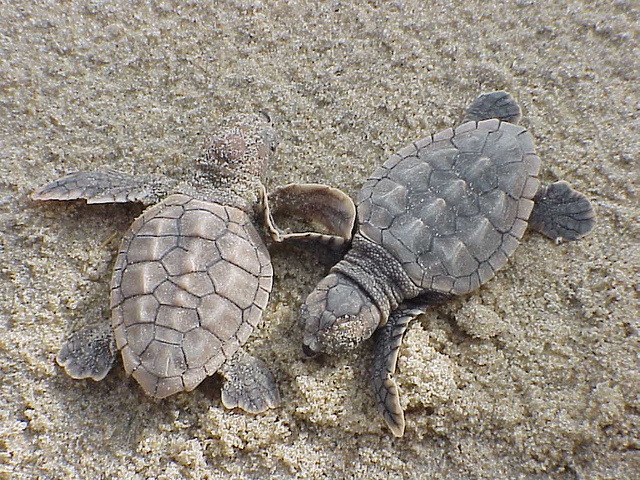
Loggerhead sea turtle hatchlings at Back Bay National Wildlife Refuge in Virginia.